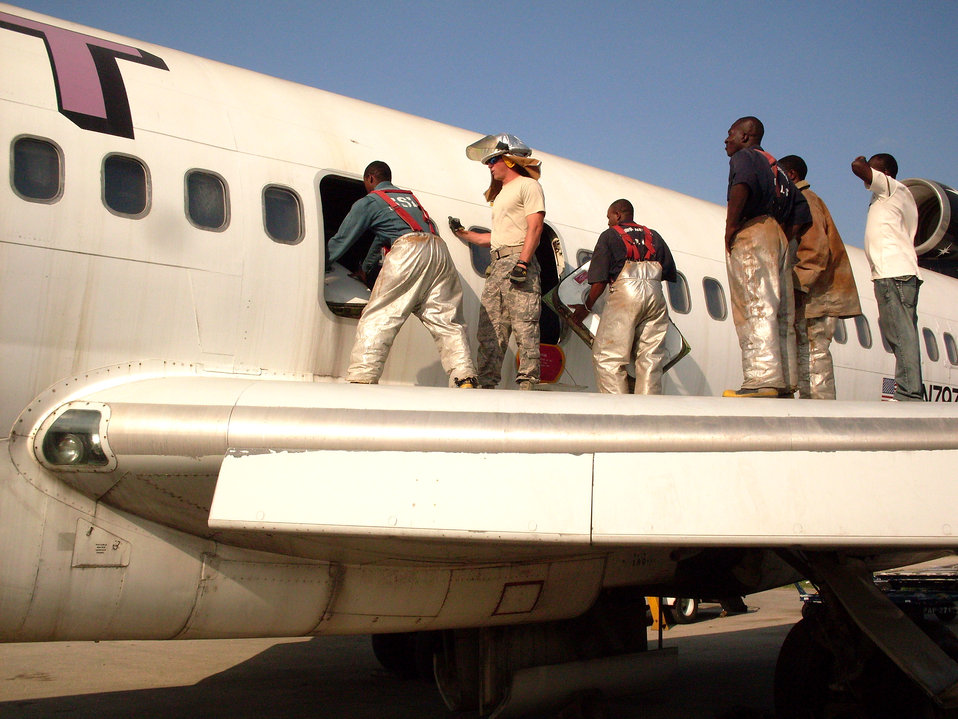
Air Force firefighters in Haiti dig through rubble, protect airfield resources

Haitian and Air Force firefighters practice entry over the wing of a Boeing 727 aircraft during an exercise at the Toussaint L'Ouverture International Airport in Port-au-Prince,Haiti.